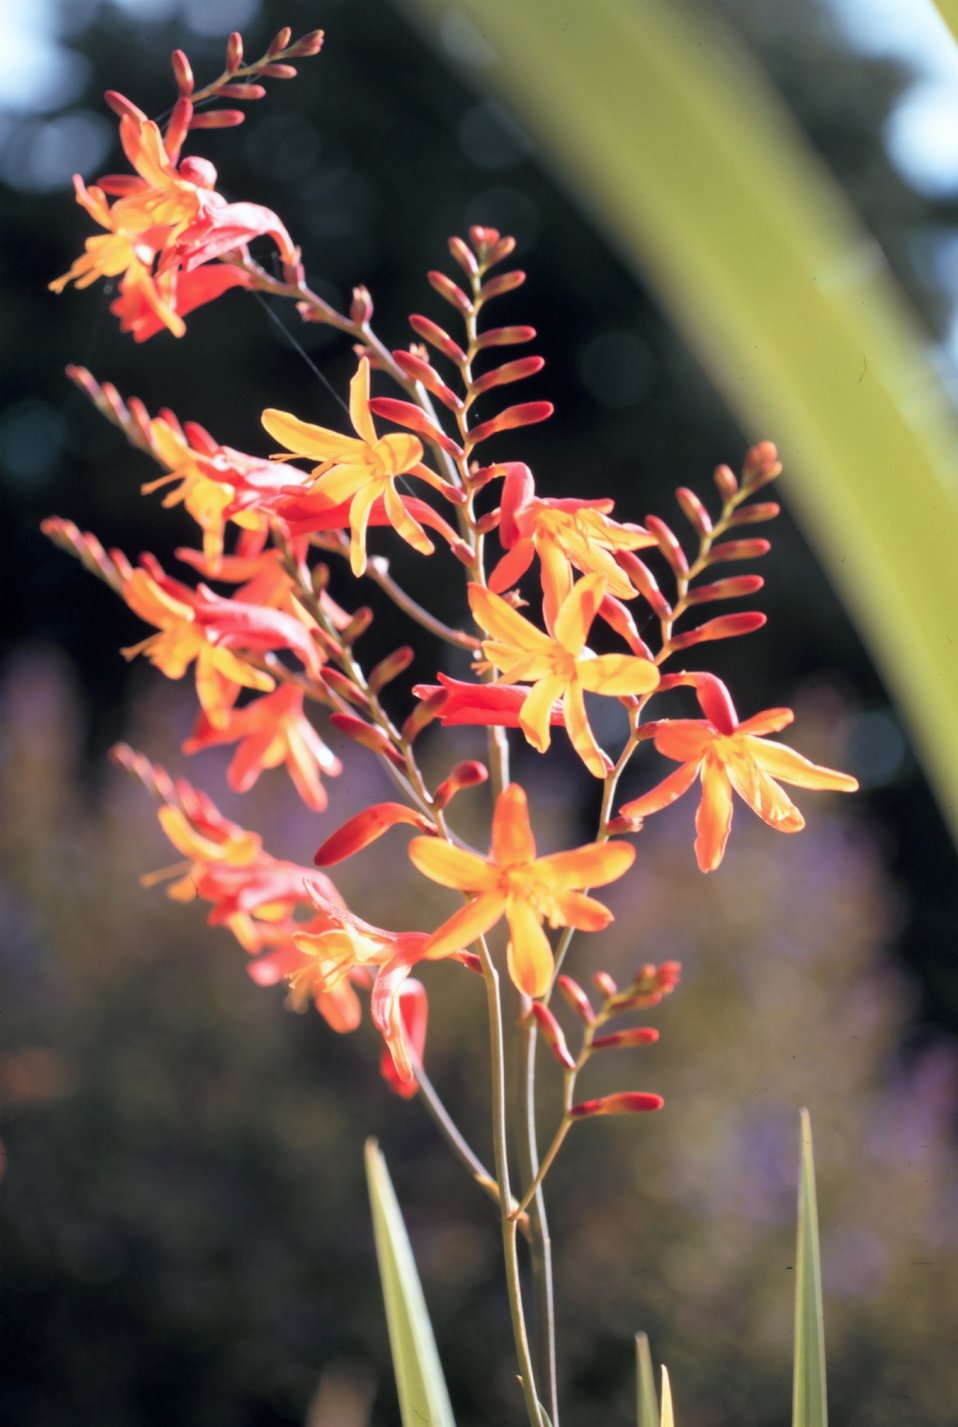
Orange-red flowers